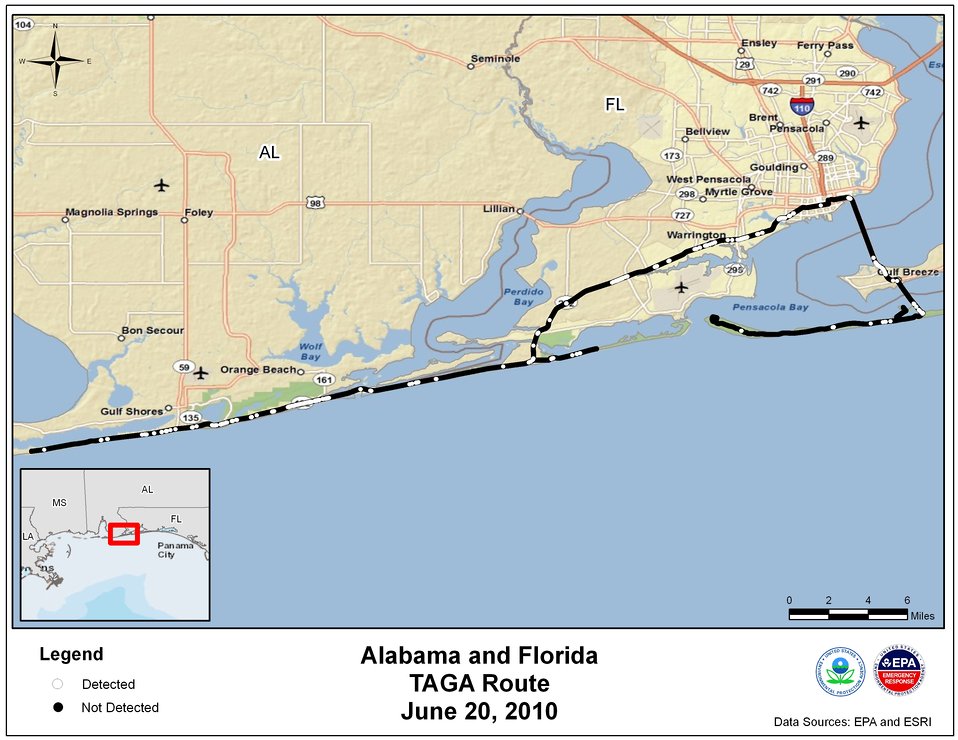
EPA TAGA Air Monitoring Locations June 20, 2010